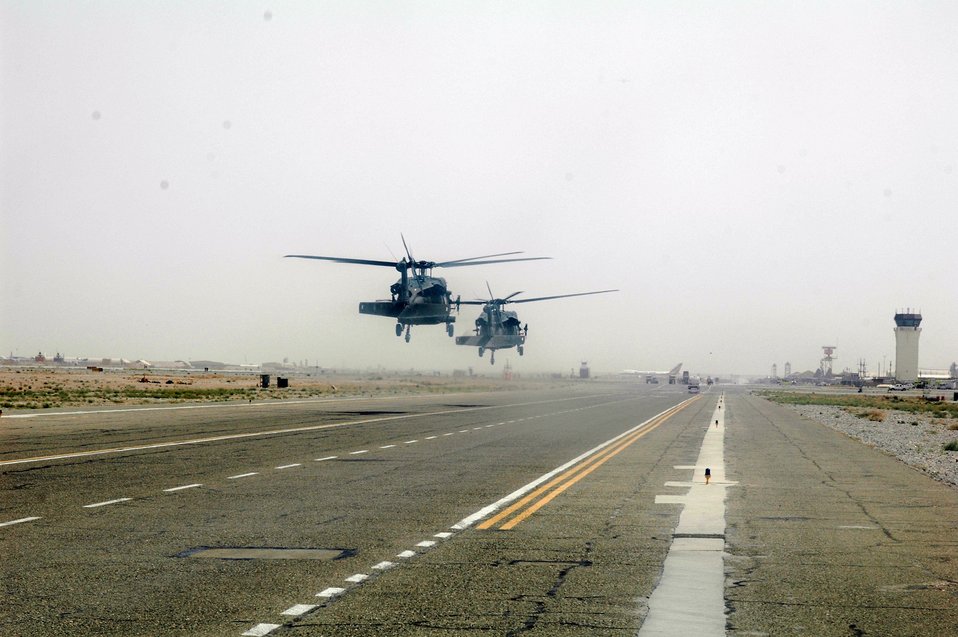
CODEL Berman